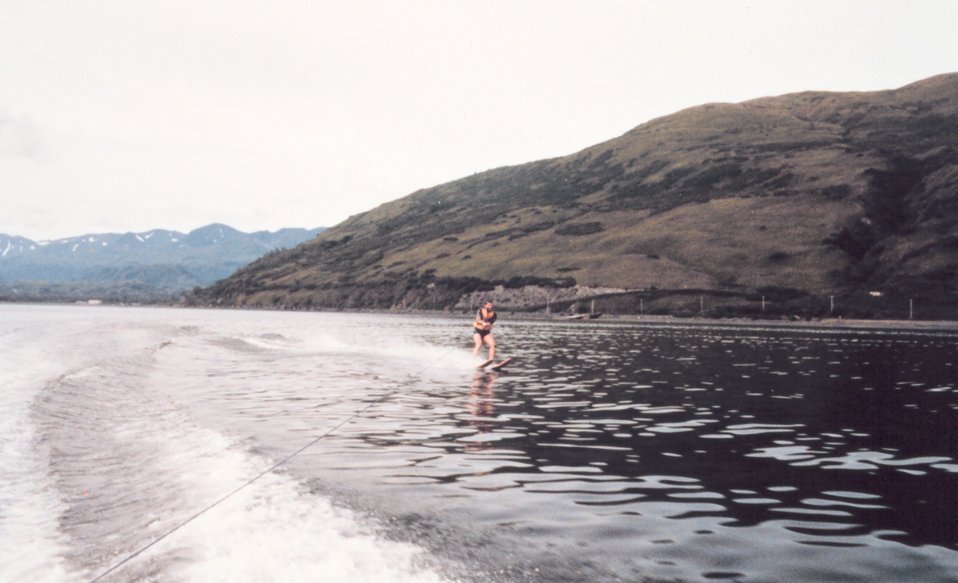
Water skiing in Womens Bay near the Coast Guard Base.